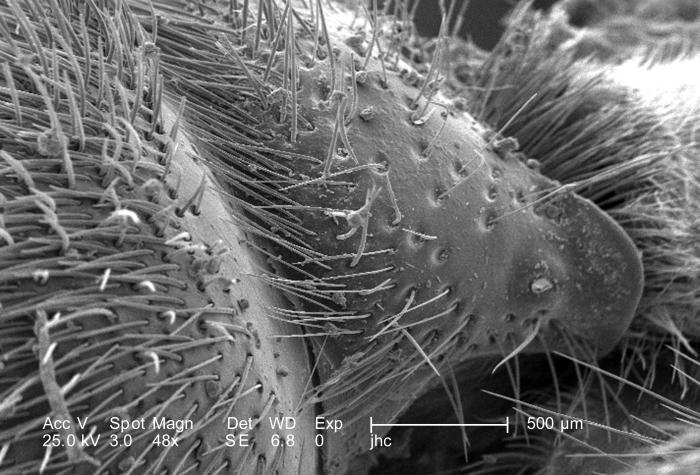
At a low magnification of 48X, this scanning electron micrograph (SEM) revealed morphologic details on an unidentified region of a female velvet ant's, Dasymutilla sp., exoskeletal surface.Note the presence of sensorial 'hairs' upon the surface of the exoskeleton, which are really not hairs as in the mammalian sense, i.e., composed of keratin, but chitinous extensions composed of the same protein as that of the exoskeleton itself.The velvet ant is not really an ant at all, but a wasp, which merely resembles an ant, hence its name. It is a member of the Family, Mutillidae, and the Order, Hymenoptera. Also see PHIL 4638, 6363, and 6364 for photographs of the ant revealing its coloration, and velvety covering of external chitinous hairs.